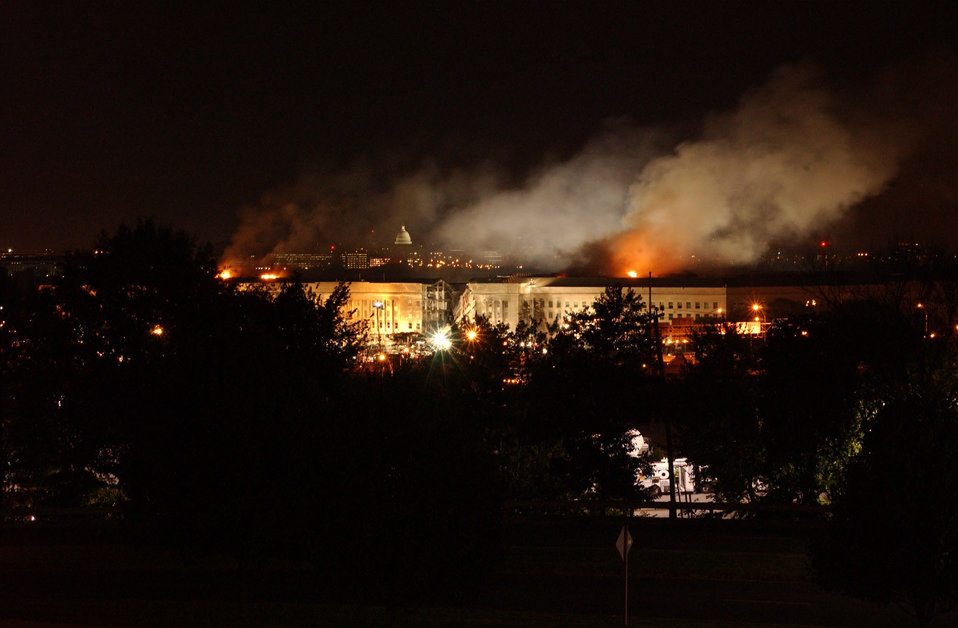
Pentagon ablaze

WASHINGTON -- Aftermath from terrorist attack on the Pentagon, Sept. 11, 2001.